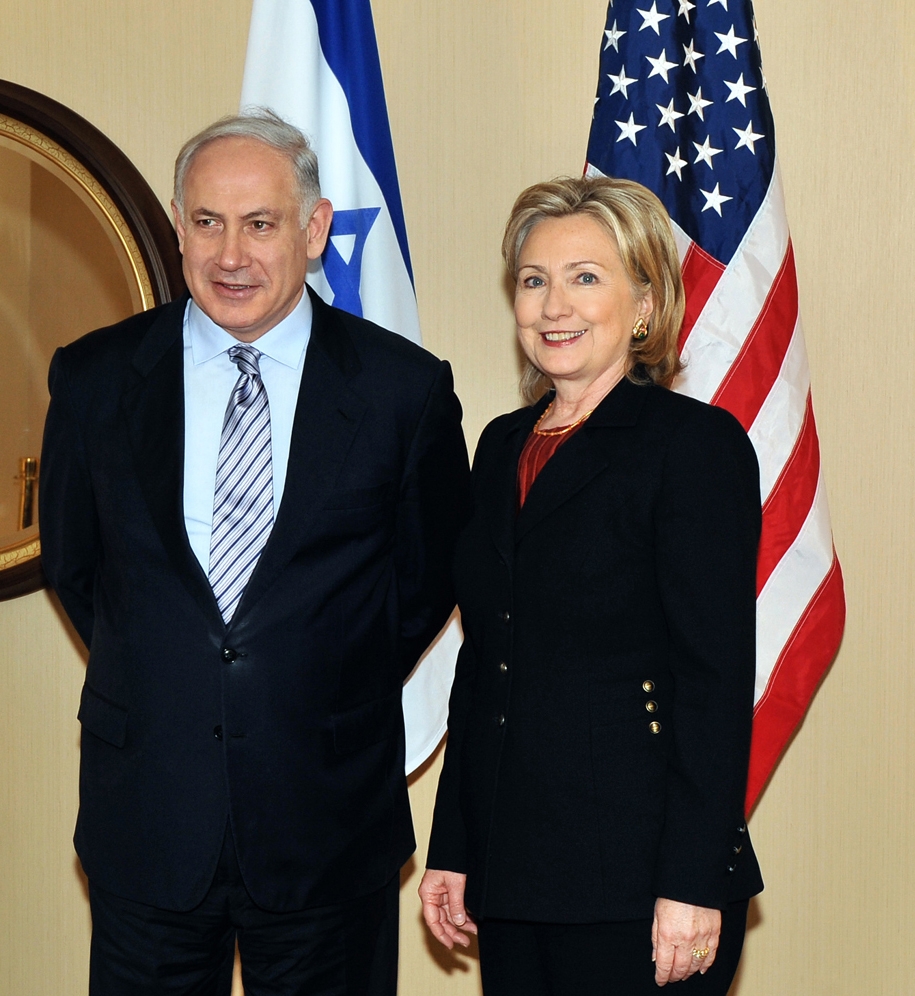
Secretary Clinton With Israeli Prime Minister Netanyahu

U.S. Secretary of State Hillary Rodham Clinton poses with Israeli Prime Minister Benjamin Netanyahu at the U.S. Department of State, Washington, D.C., March 22, 2010.